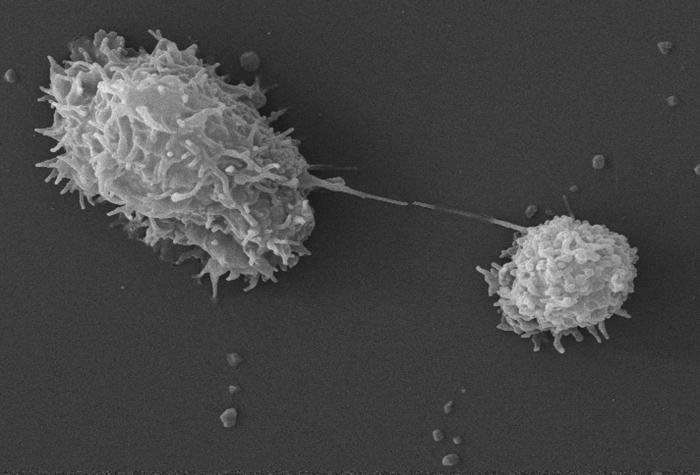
This scanning electron micrograph (SEM) revealed two Acanthamoeba polyphaga protozoa, as they were interacting through their projecting pseudopodia, from the Latin pseudo = false, and podia = feet, extending from the surfaces of these organisms. These pseudopodia enable the amoebae to move about, and grasp objects in their environment.